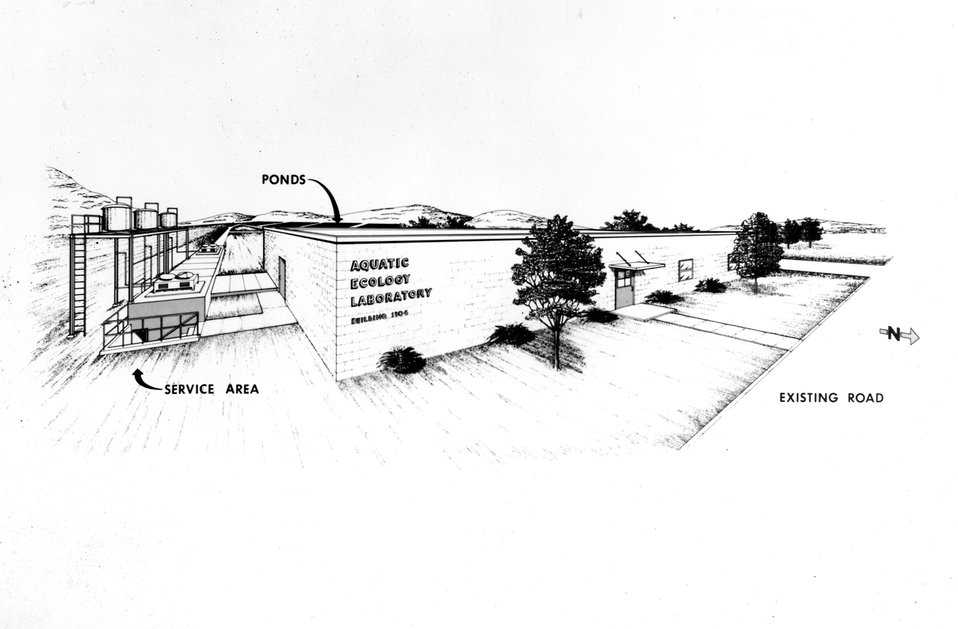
AQUATIC ECOLOGY LABORATORY...Architect's conception of the new Aquatic Ecology Laboratory under construction at Oak Ridge National Laboratory, Tennessee, for determining thermal effects on fish and other aquatic life. c. 1972